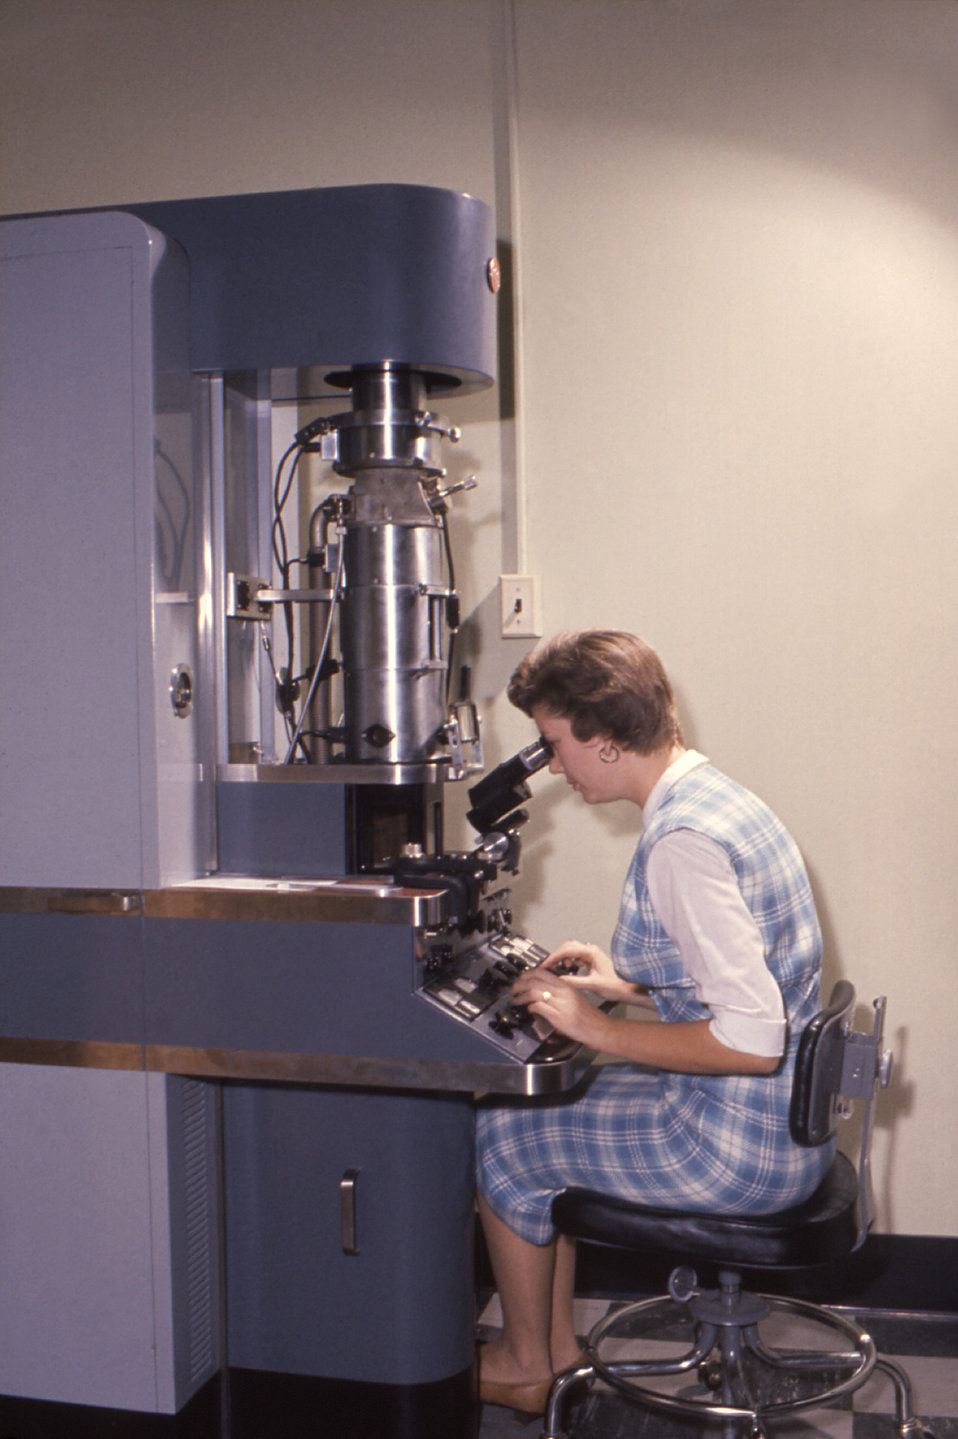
This 1960 photograph depicted a laboratory technician who was seated at a transmission electron microscope (TEM), as she was analyzing the ultrastructural details of a laboratory specimen.